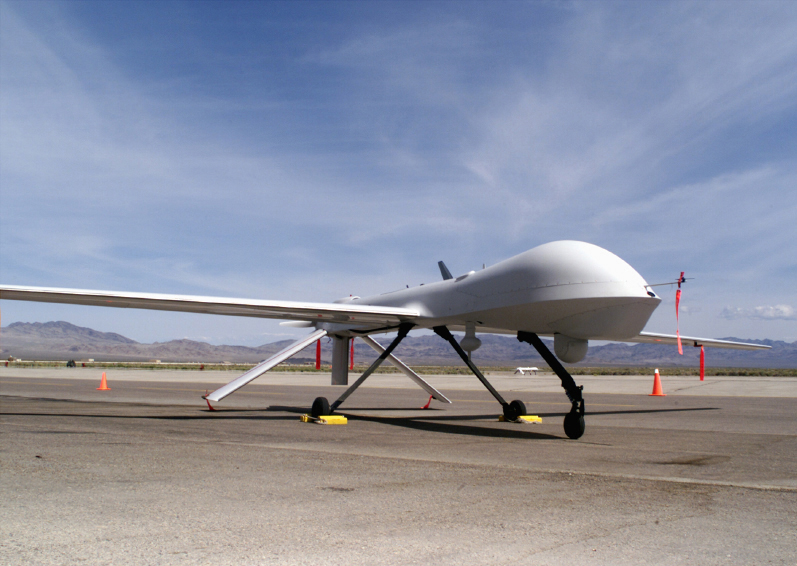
Predator

FILE PHOTO -- The RQ-1 Predator is a medium-altitude, long-endurance unmanned aerial vehicle system. The Predator is a system, not just an aircraft. The fully operational system consists of four air vehicles (with sensors), a ground control station and a Predator primary satellite link communication suite.